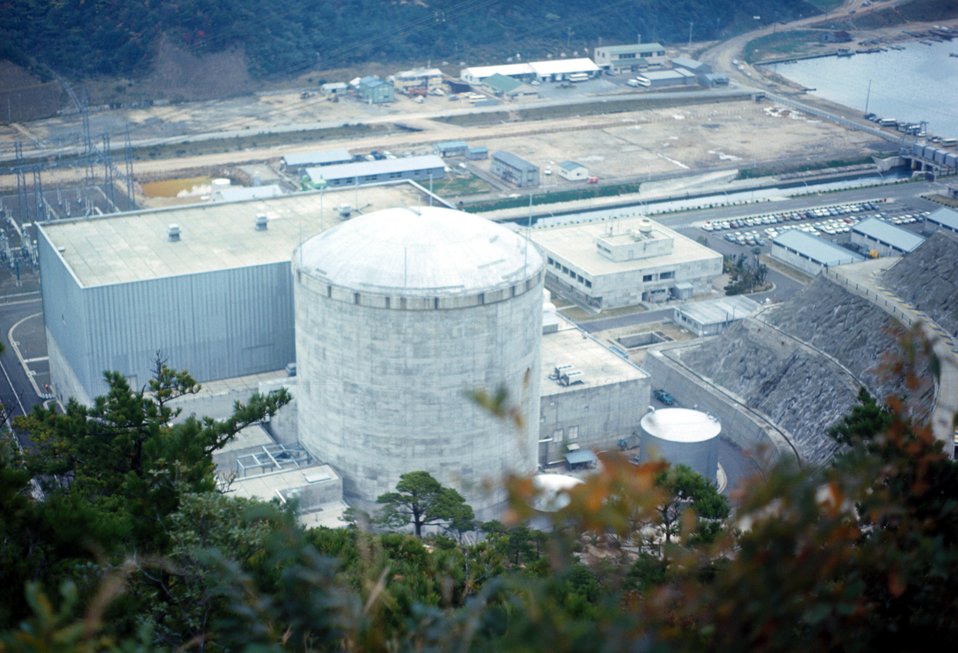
Japan - Tsuruga Plant - Japco Nuclear Reactor. c. 1970